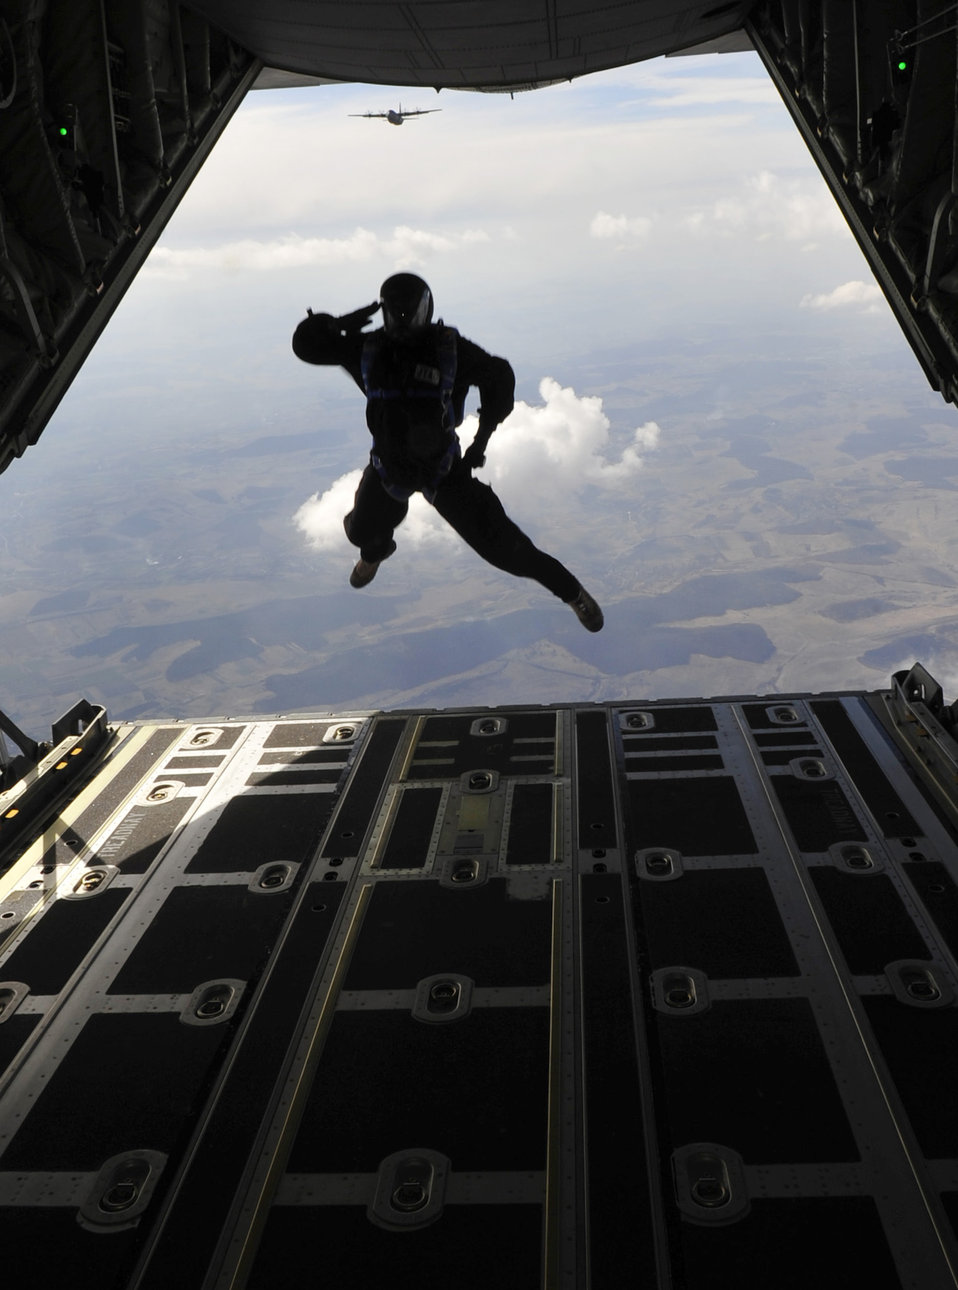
Carpathian Spring 2011

Master Sgt. Robert Zackery salutes as he exits a C-130J Super Hercules during a combined high-altitude, low-open, jump March 18, 2011, over a landing zone near Campia Turzii, Romania. This jump was conducted as part of Carpathian Spring 2011, an exercise where members of the U.S. military joined their Romanian counterparts to learn from one another and strengthen alliances. Sergeant Zackery is a jumpmaster assigned to the 4th Air Support Operations Group.